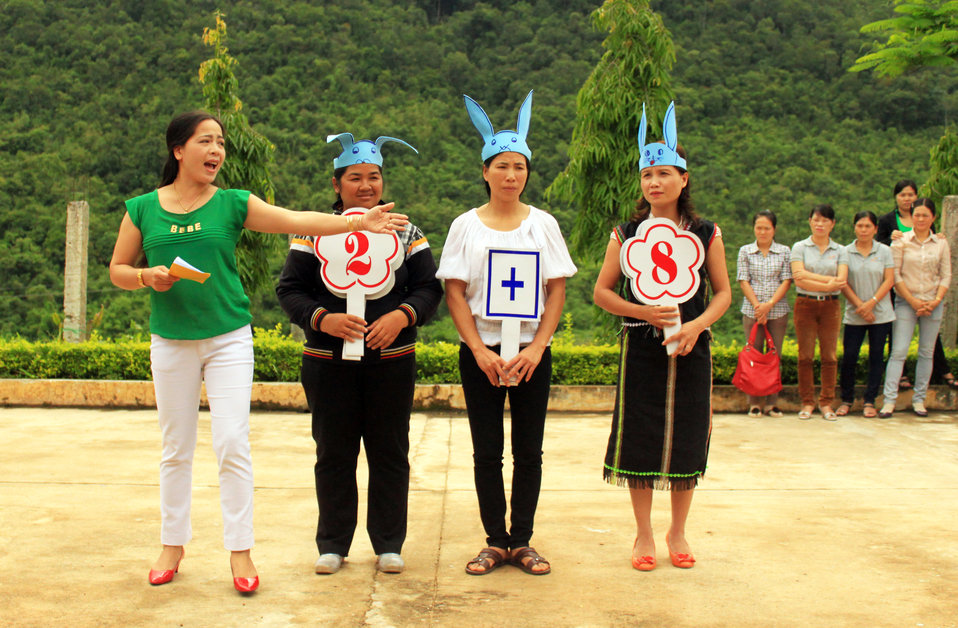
Teachers in Kon Tum practice what they learned from USAID-funded intensive training courses